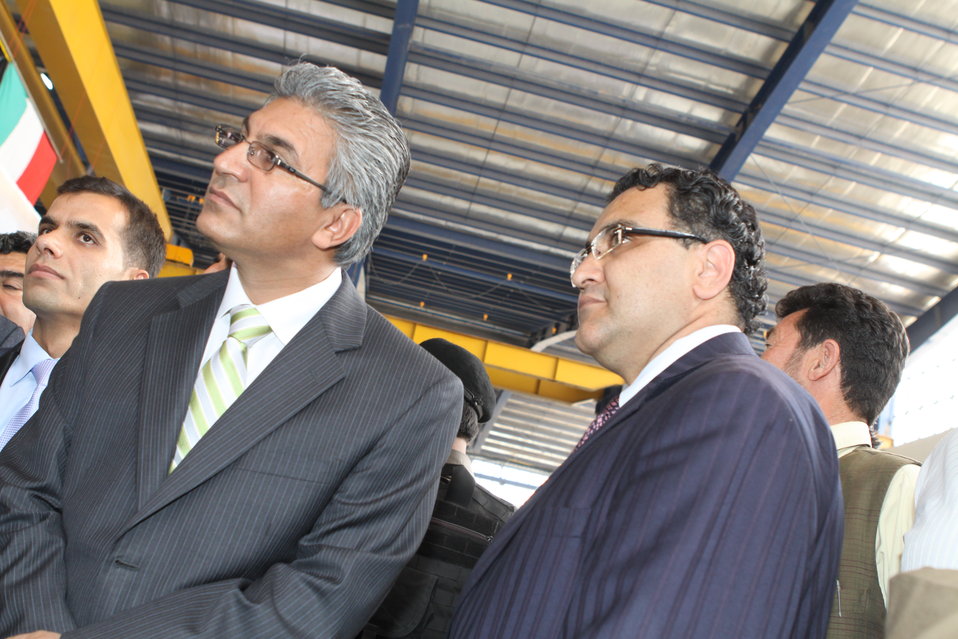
100525 Hirat Marble Conference 489